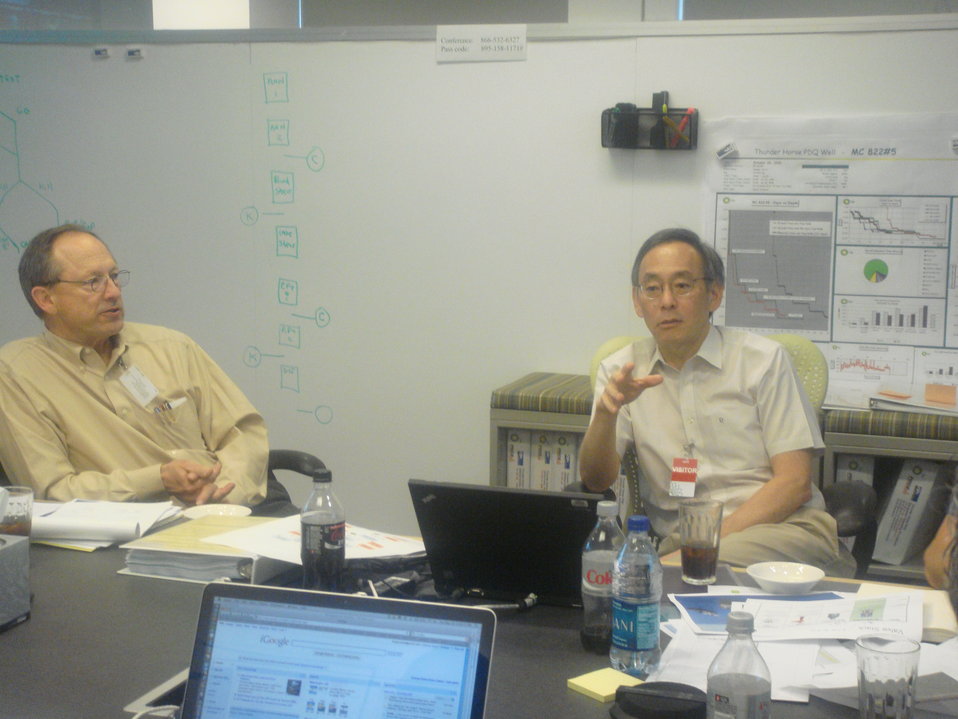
chu1

Energy Secretary Steven Chu consults with scientists and BP officials in Houston on May 25, reviewing BP's plans for stopping the oil spill and providing scientific advice on how to maximize chances of success